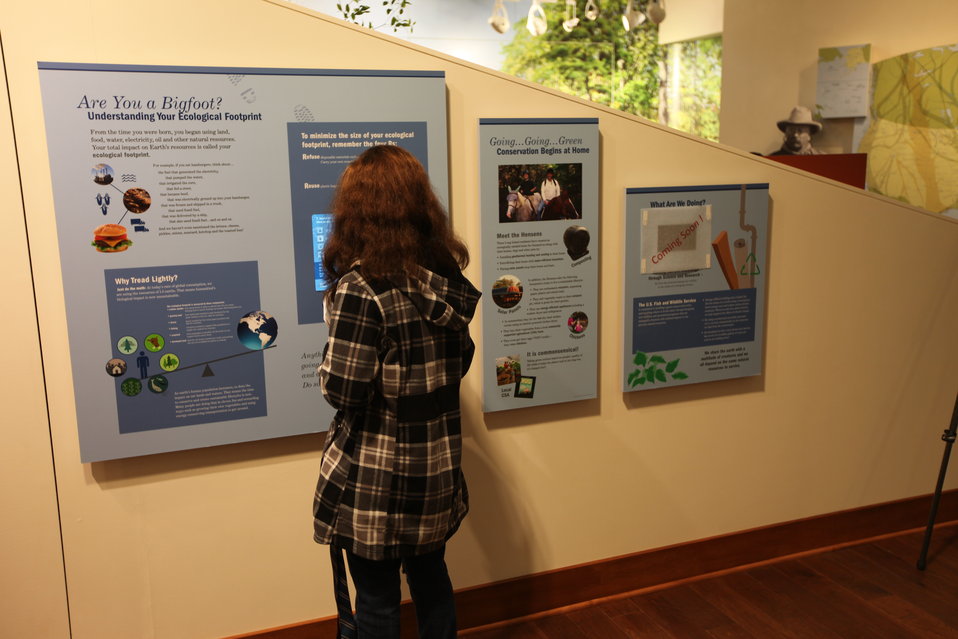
Student interacts with an exhibit

A student interacts with an exhibit.